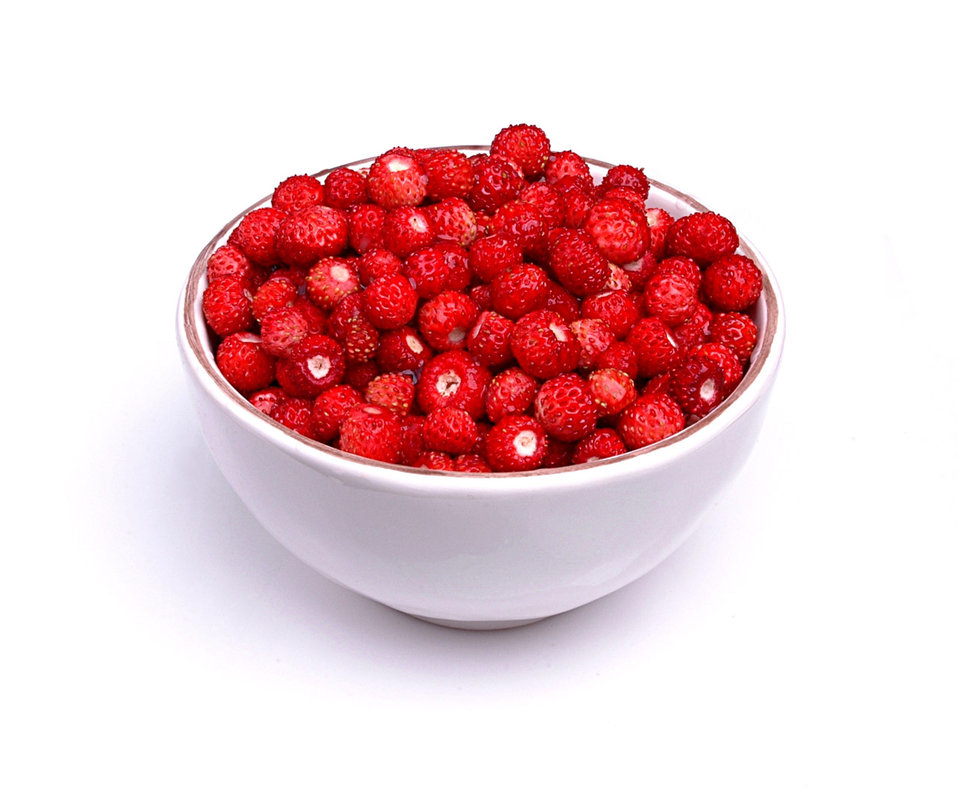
Bowl with wild strawberries.